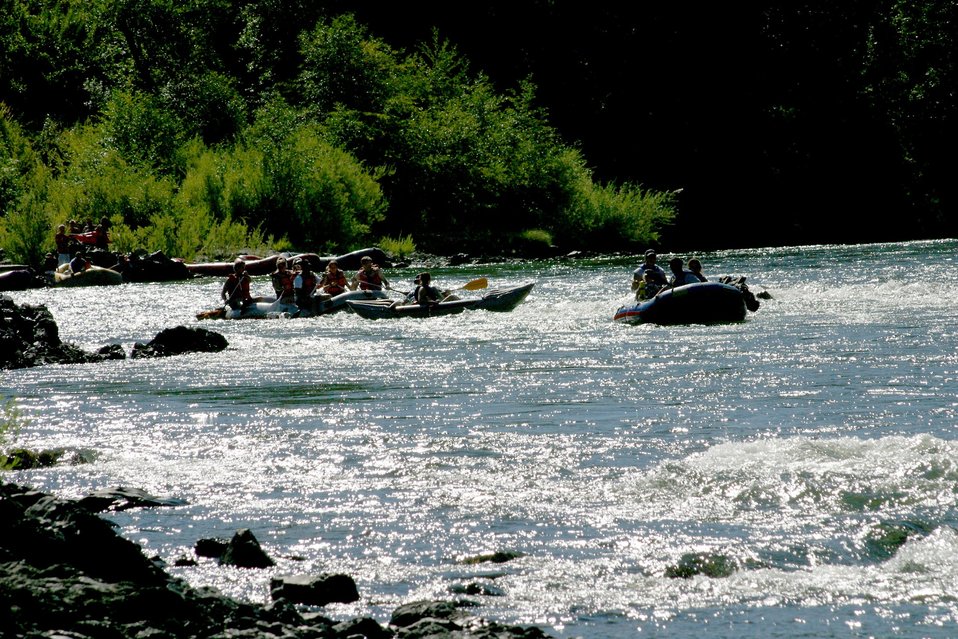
Boaters at Hog Creek